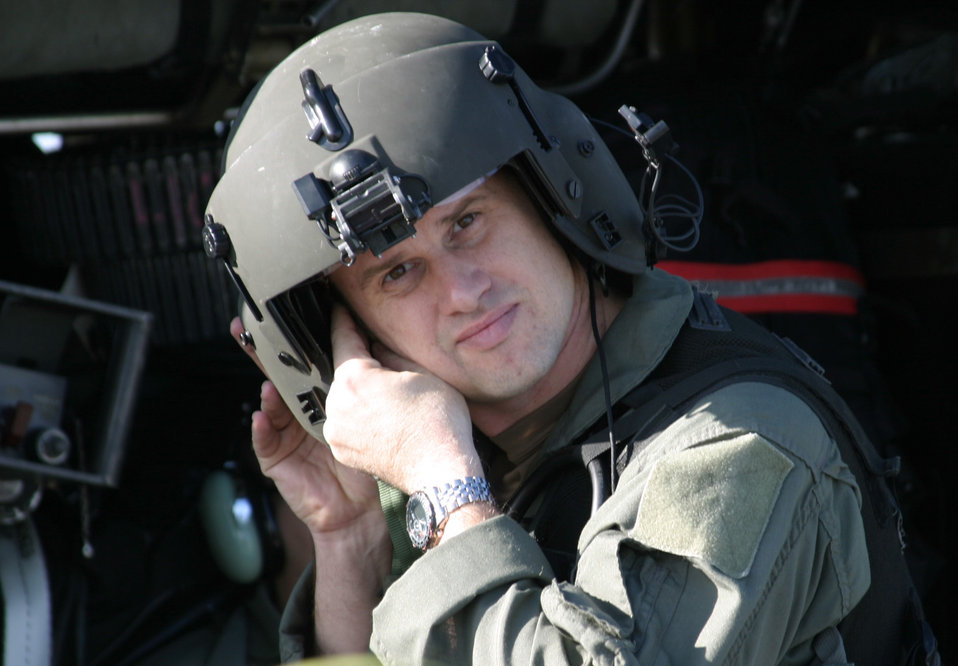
Kadena Airmen deploy to Philippines

KADENA AIR BASE, Japan -- Tech. Sgt. Keith Kleinert, from the 33rd Rescue Squadron, dons his helmet before boarding a HH-60 Pave Hawk helicopter for a mission to the Philippines on Dec. 9. Three HH-60s from the 33rd RQS, two MC-130 Combat Shadows from the 353rd Special Operations Group and a 909th Air Refueling Squadron KC-135 Stratotanker launched from here to provide humanitarian assistance to nearly 170,000 people displaced by Typhoon Nanmadol.